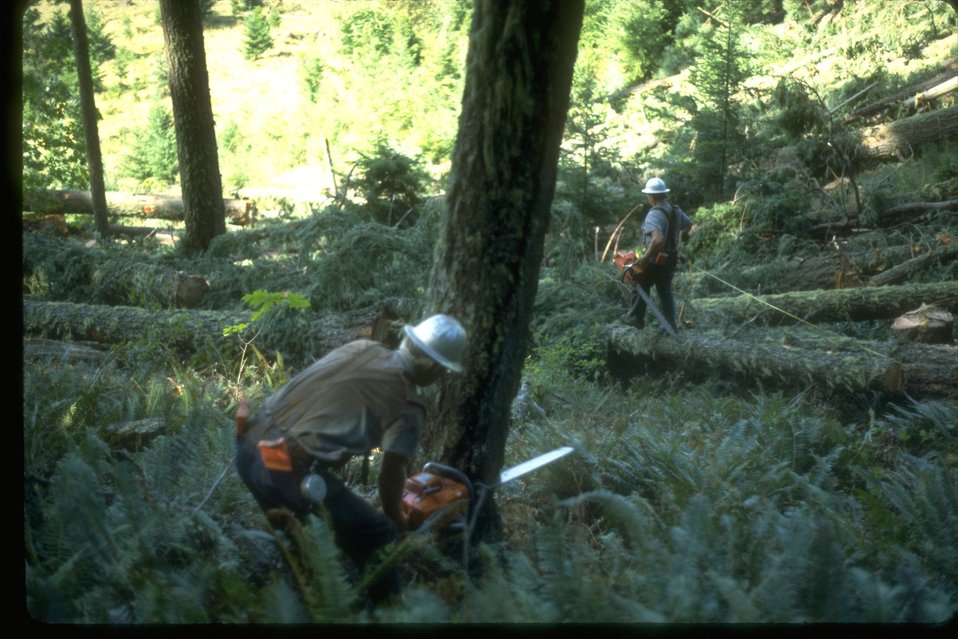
Logger cutting timber.